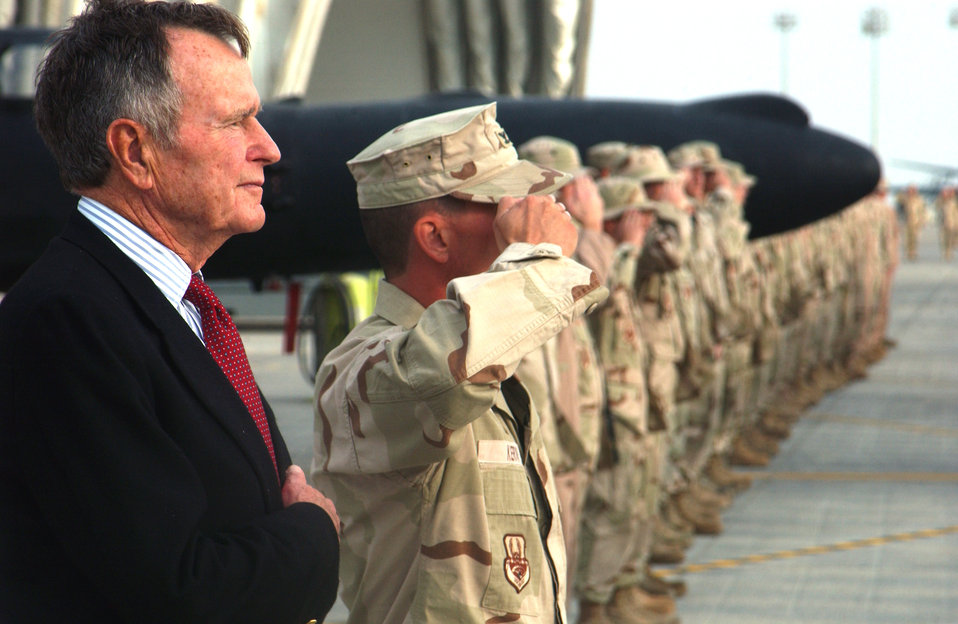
Former president visits Airmen

Former President George H.W. Bush listens to the national anthem with Airmen from the 380th Air Expeditionary Wing Nov. 20 in Southwest Asia. President Bush stopped by the wing to listen to a mission briefing and meet the Airmen assigned here.